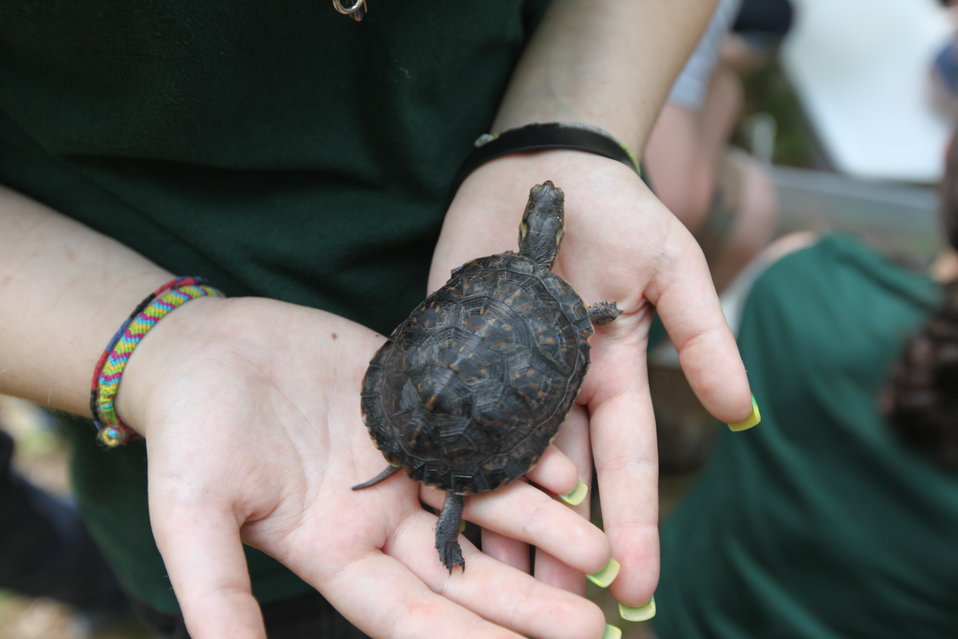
Blanding's turtle release, Assabet River, MA.